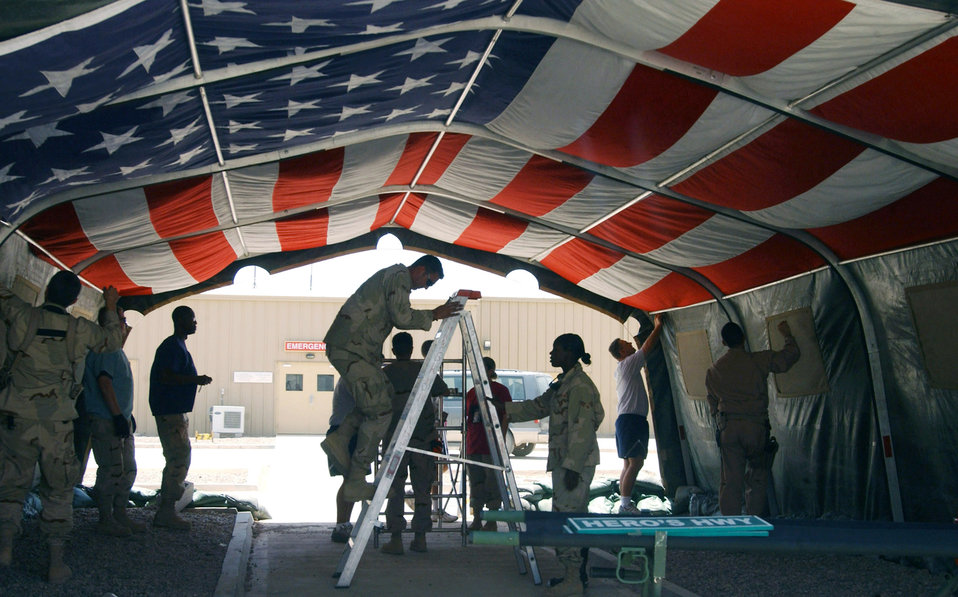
Hero's Highway

Airmen and volunteers from the 332nd Expeditionary Medical Group put up the American flag that hangs in the Air Force Theater Hospital's Hero's Highway at Balad Air Base, Iraq. The Hero's Highway was moved from the tent hospital to the new facility July 21. Wounded servicemembers travel under this flag as they make their way from the helicopter pad to the hospital. The new facility, which opens Aug. 3, will have about 97,000 square feet featuring 20 intensive care units, 40 beds and up to eight operating tables.